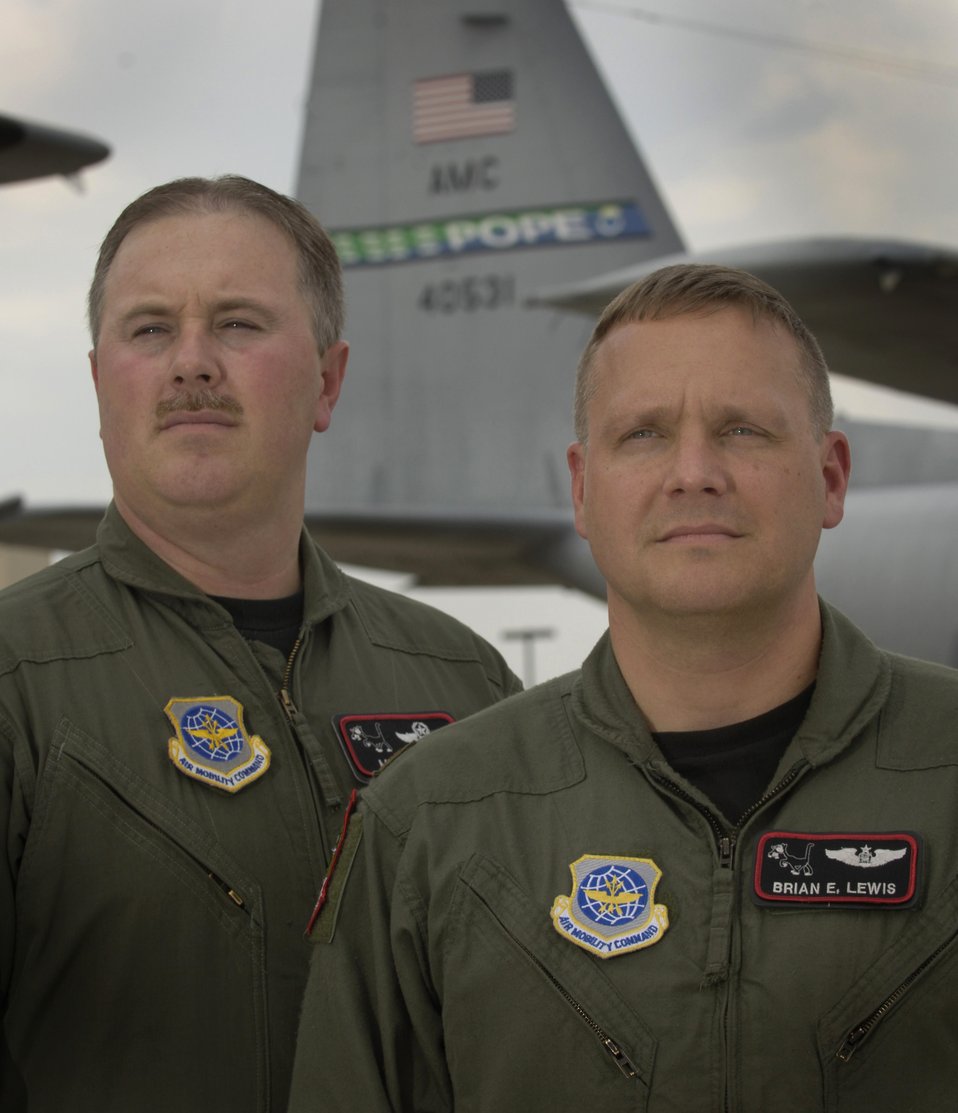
Airmen make history in Iraq

Majs. Michael Frame and Brian Lewis are two members of the aircrew that received the Clarence Mackay Trophy, an annual award given for the most meritorious flight of the year by an Air Force person, persons or organization. In addition to the majors, who are stationed at Pope Air Force Base, N.C., the other crew members are Senior Master Sgt. John Spillane, Little Rock AFB, Ark.; Master Sgt. Thomas Lee, Ramstein Air Base, Germany; and Tech. Sgt. Corey Turner, Dyess AFB, Texas.